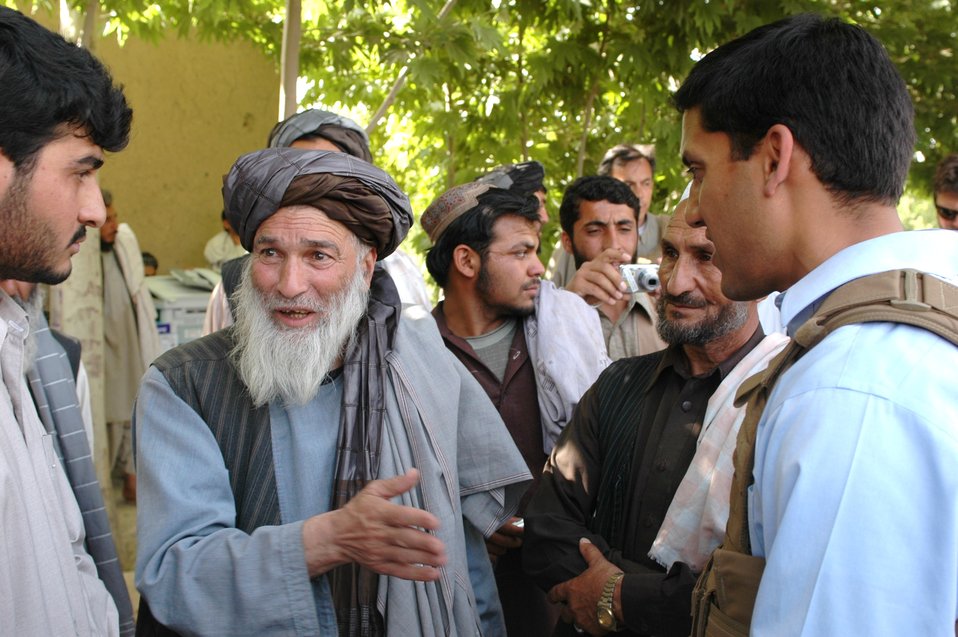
Dr Shah Visits Argandab April 10, 2010